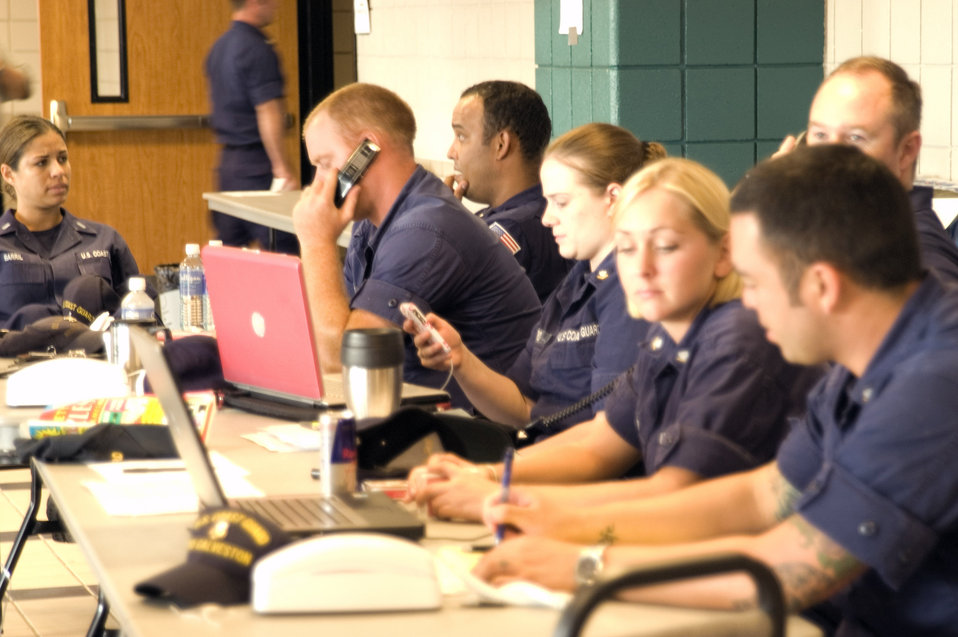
Coast Guard Incident Command Center prepares for Ike

Coast Guardsmen from the Coast Guard Sector Houston-Galveston inprocess new arrivals to the Leonard E. Merrell Center Sept. 11 in Katy, Texas. The Coast Guardsmen are preparing for the arrival of Hurricane Ike expected to hit the Gulf Coast Sept. 13.